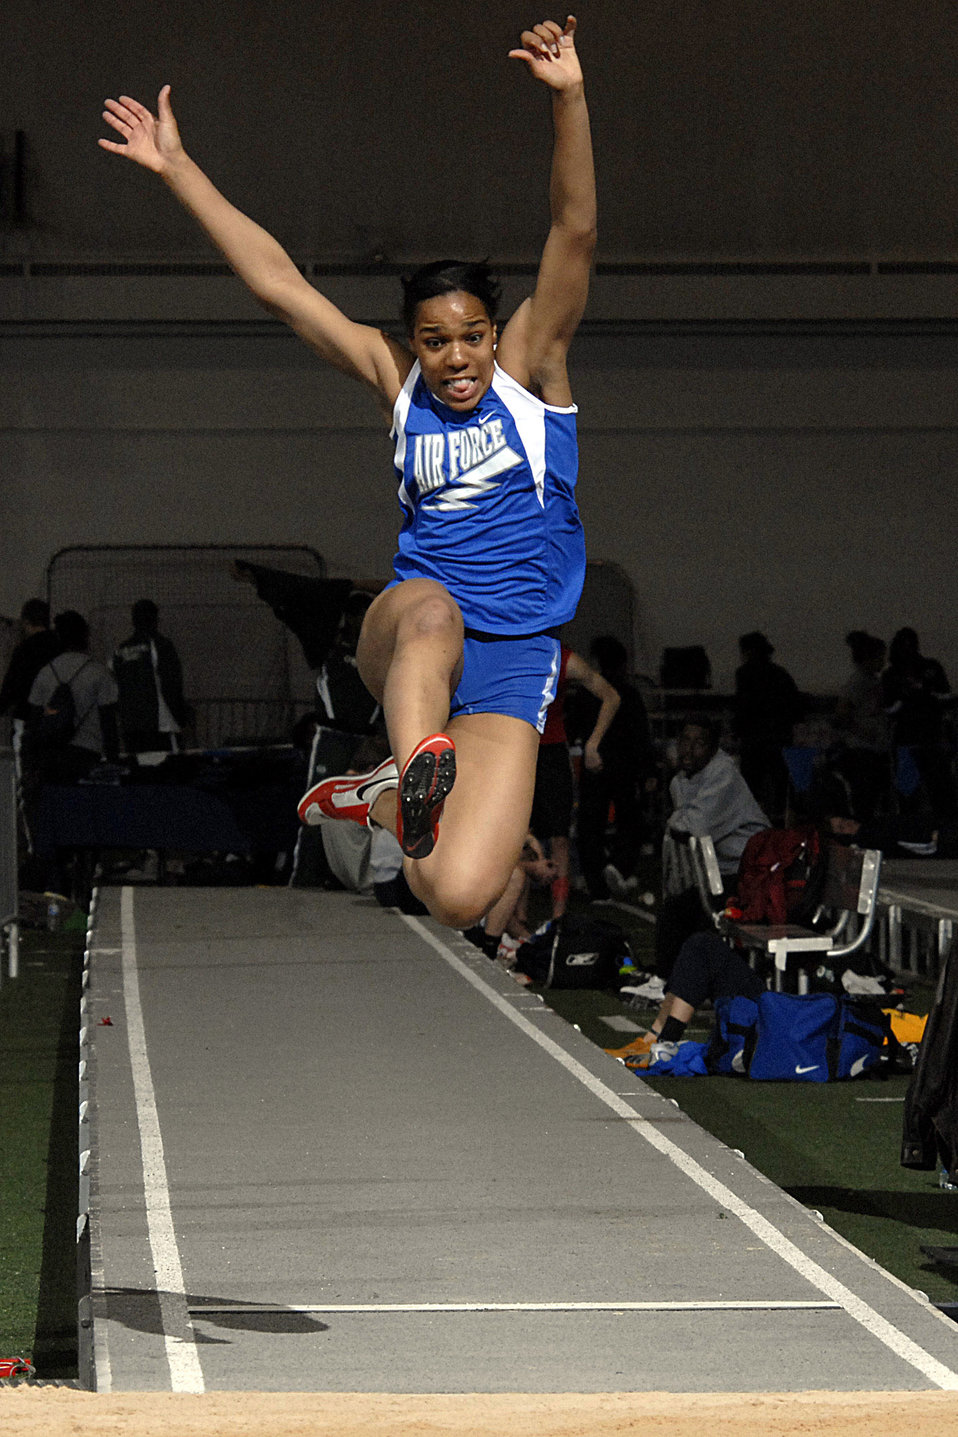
Falcons Conclude Competition at Air Force Open

Freshman long jumper Nercresainne White recorded a fifth-place distance of 18'1